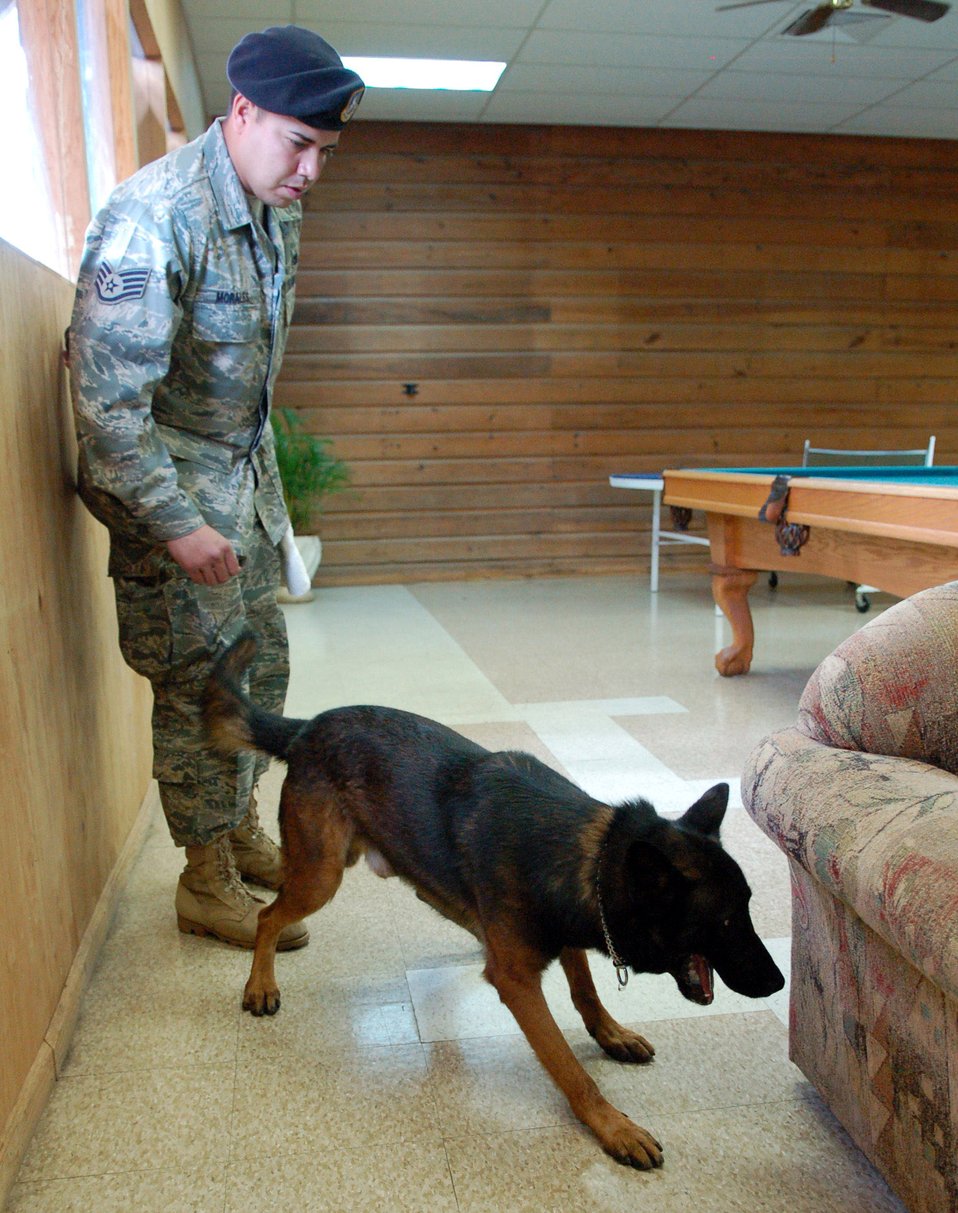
Military Working Dog teams assist with local security missions

Staff Sgt. Eduard Morales encourages Tommy, a three-year old Belgian Malinois, during a training exercise Jan. 15 at Soto Cano Air Base, Honduras. The Joint Task Force-Bravo Joint Security Forces team is being evaluated during the search process to detect areas needing to be fine-tuned in the team's working relationship.